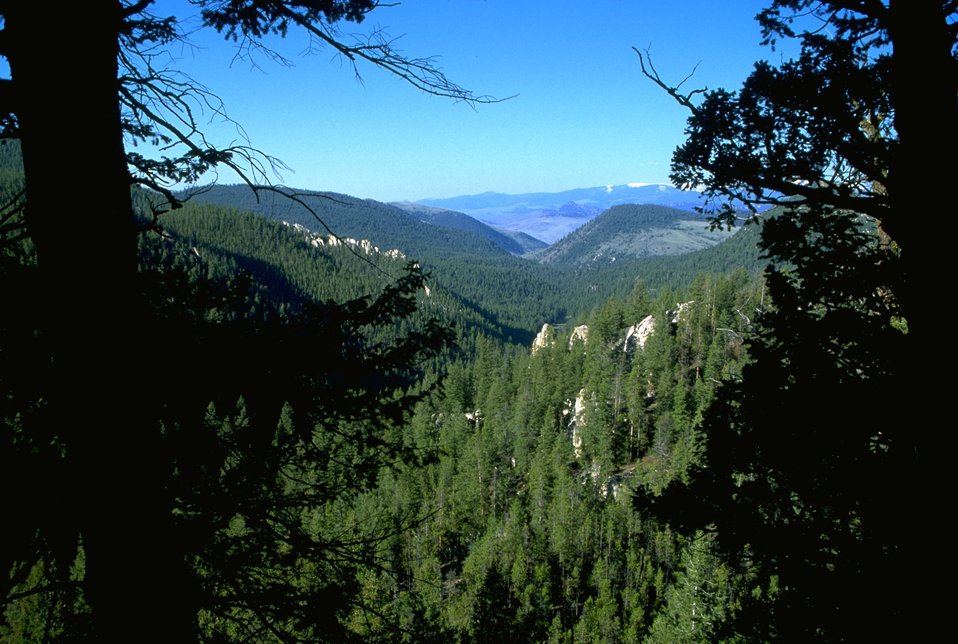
Scenic view of Humbug Spires Wilderness Study Area